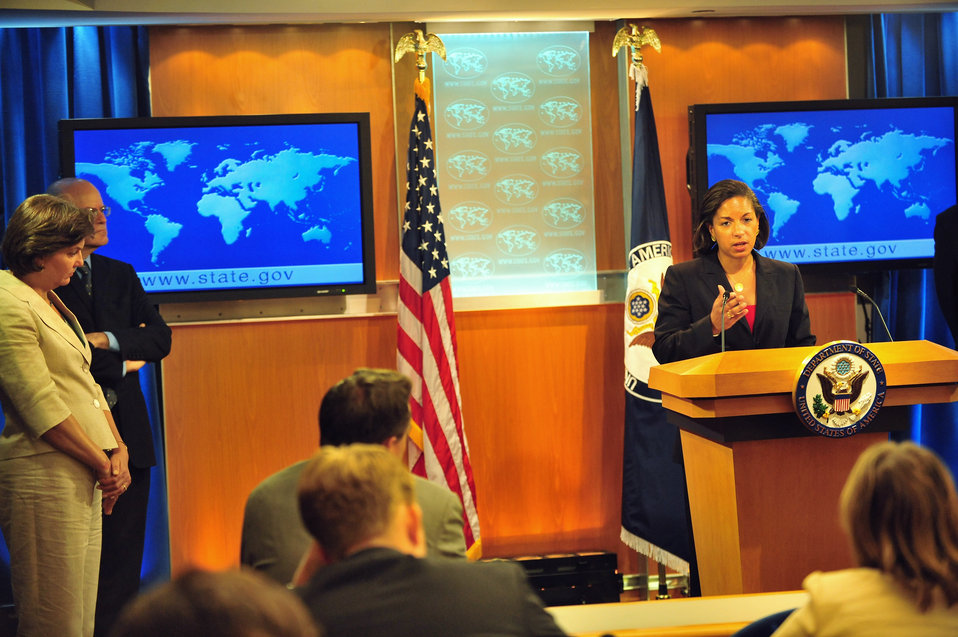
Ambassador Rice Addresses Reporters

U.S. Permanent Representative to the United Nations, Ambassador Susan Rice, addresses reporters in a special press briefing on the New Republic of South Sudan, at the U.S. Department of State in Washington, D.C., on July 7, 2011. She was joined by Assistant Secretary of State for African Affairs Johnnie Carson and USAID Deputy Administrator Don Steinberg.